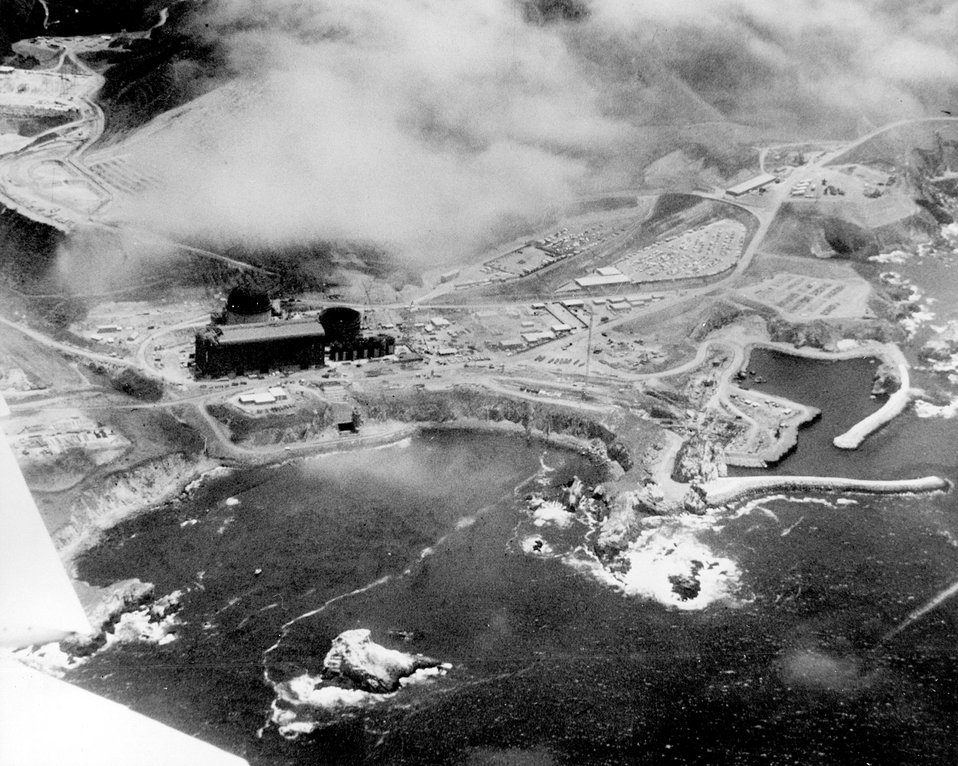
Nuclear Generating Stations 1 and 2 in San Luis Obispo County, California. Circa 1973.